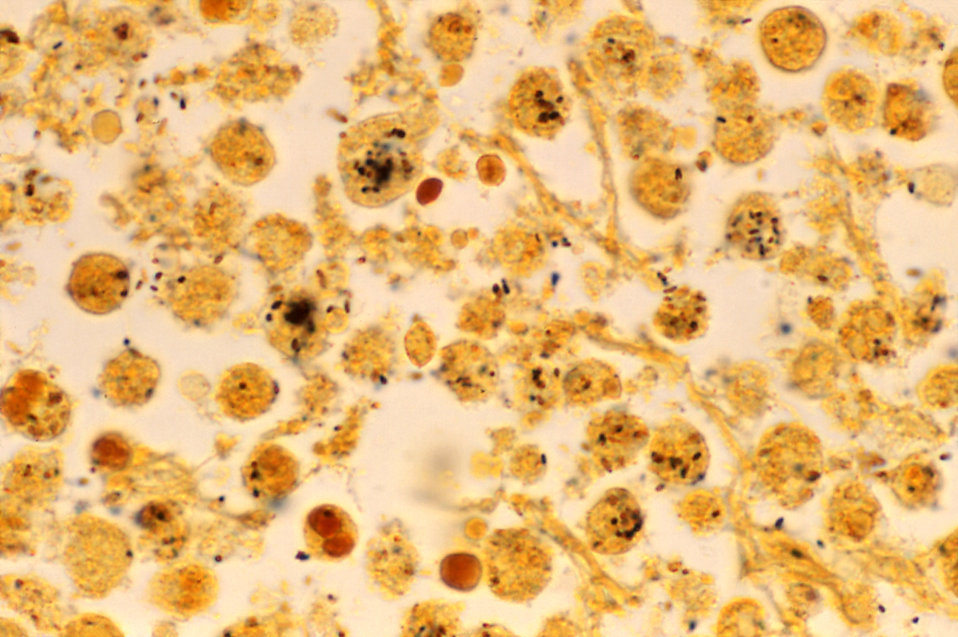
This micrograph depicted cytoarchitectural details seen in a lung tissue specimen from a Knoxville patient with fatal pneumonia due to Legionnaires' disease. The tissue was stained using Dieterle's silver stain, which employs a silver-impregnation staining technique, the results of which reveals the presence of Legionella pneumophila bacteria.How serious is it? What is the treatment?